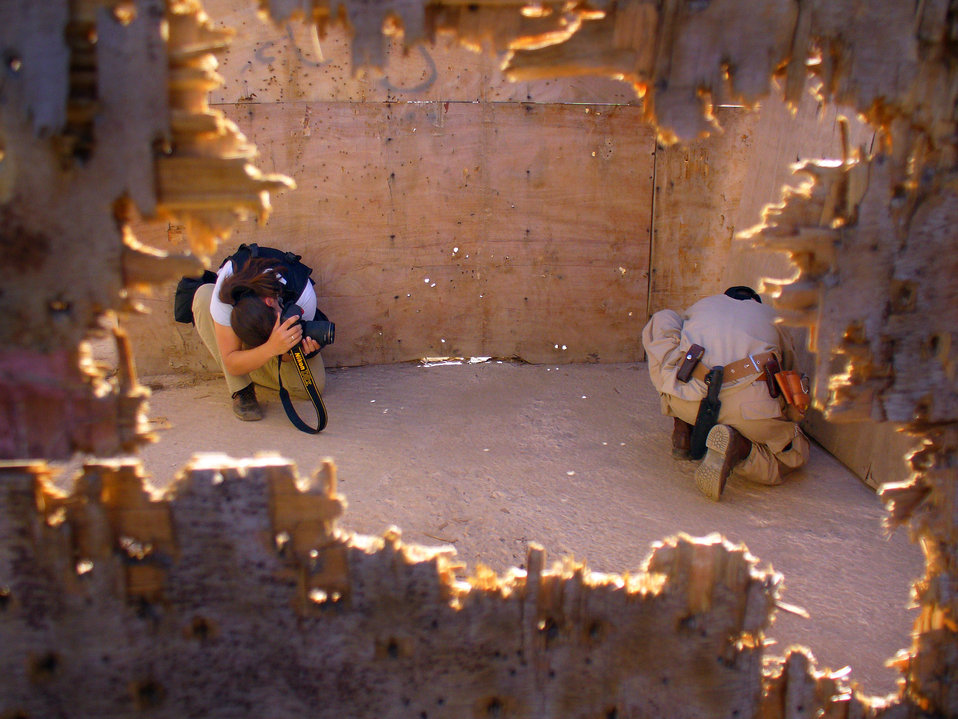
Still documentation

SANA'A, Yemen -- Staff Sgt. Stacy Pearsall documents a Yemeni explosive ordnance disposal technician disabling the blasting cap on a suspicious package during Exercise Western Response training. Sergeant Pearsall is with the 1st Combat Camera Squadron at Charleston Air Force Base, S.C.